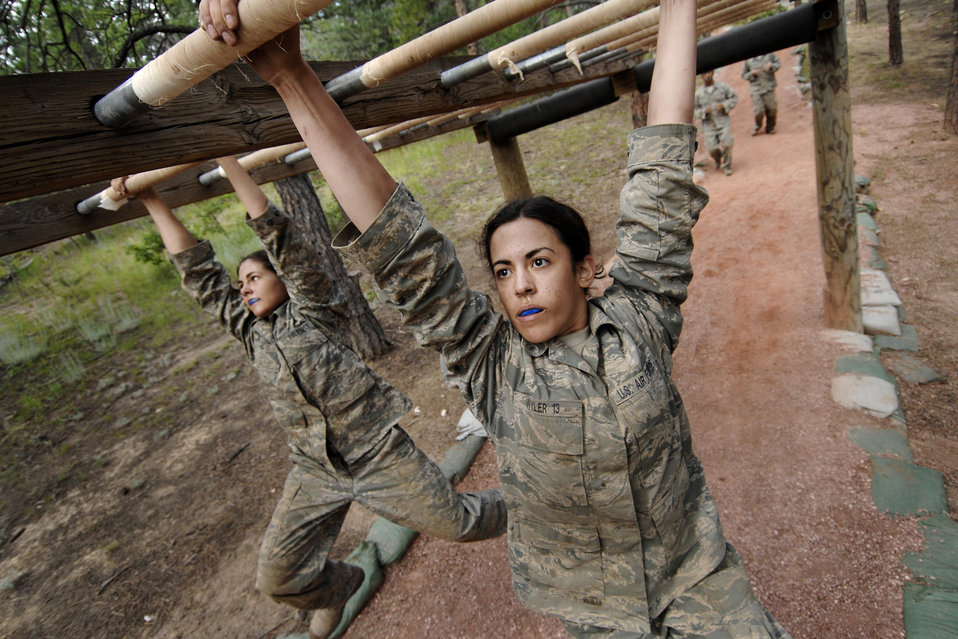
Academy basic field training at Jacks Valley

Air Force Academy basic cadets attack the monkey bars July 21 at the Jacks Valley Assault Course near Colorado Springs, Colo. The fall academic semester begins Aug. 6.